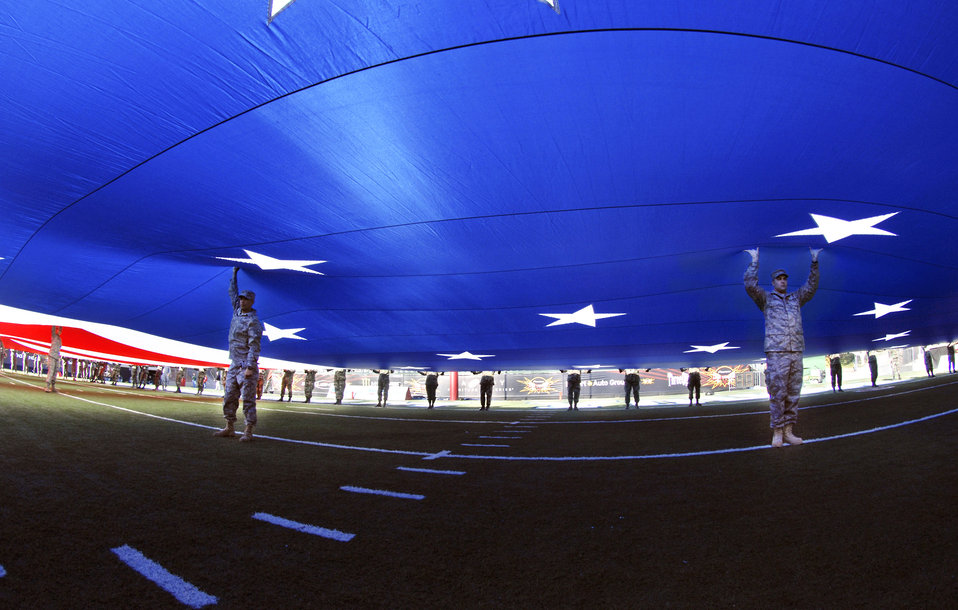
Support for the flag

Airmen assigned to Nellis and Creech air force bases in Nevada, support a huge American flag Dec. 20 during the singing of the national anthem at the Pioneer Las Vegas Bowl at Sam Boyd Stadium in Las Vegas.